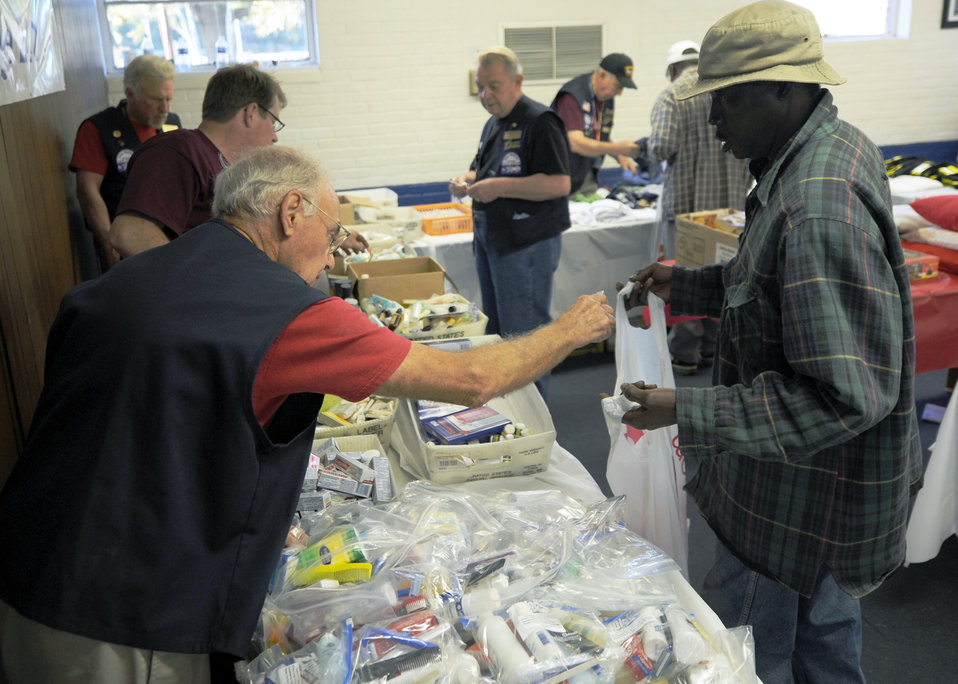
Local 'Stand down' serves homeless veterans

Members of the Charleston Elks Lodge 242 pass out hygiene products to homeless veterans and civilians at the 11th annual Stand Down Against Homelessness Oct. 29, 2010, at North Charleston Armory Park, S.C. The Benevolent and Protective Order of Elks is an American fraternal order and social club founded in 1868.